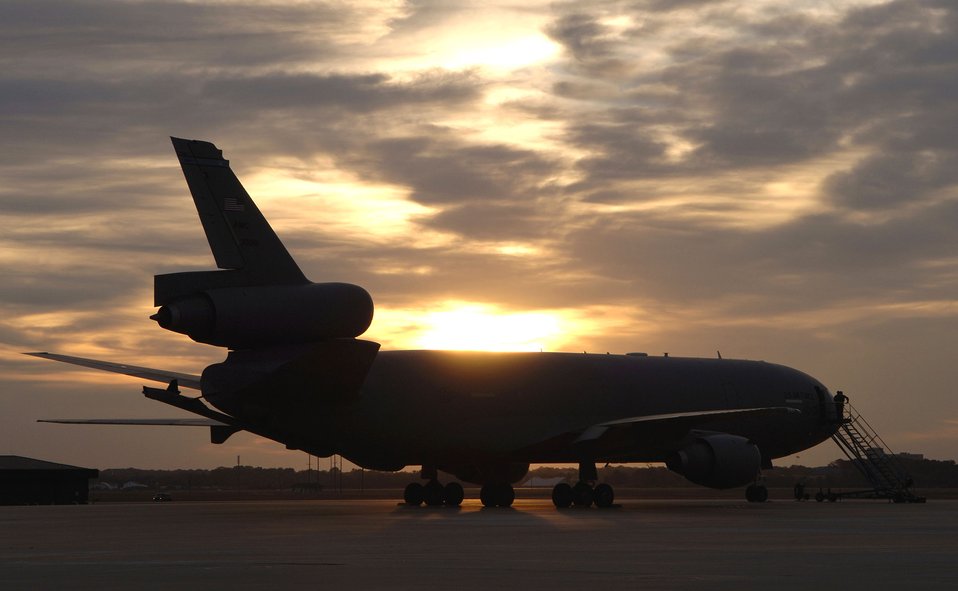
Tanker taxi

MCGUIRE AIR FORCE BASE, N.J. (AFPN) -- A KC-10A Extender aircraft parks on the flightline at sunset. The KC-10 is an advanced tanker and cargo aircraft designed to provide increased global mobility for U.S. armed forces. It can transport up to 75 people and nearly 170,000 pounds of cargo. It has three large fuel tanks that carry more than 356,000 pounds of fuel.